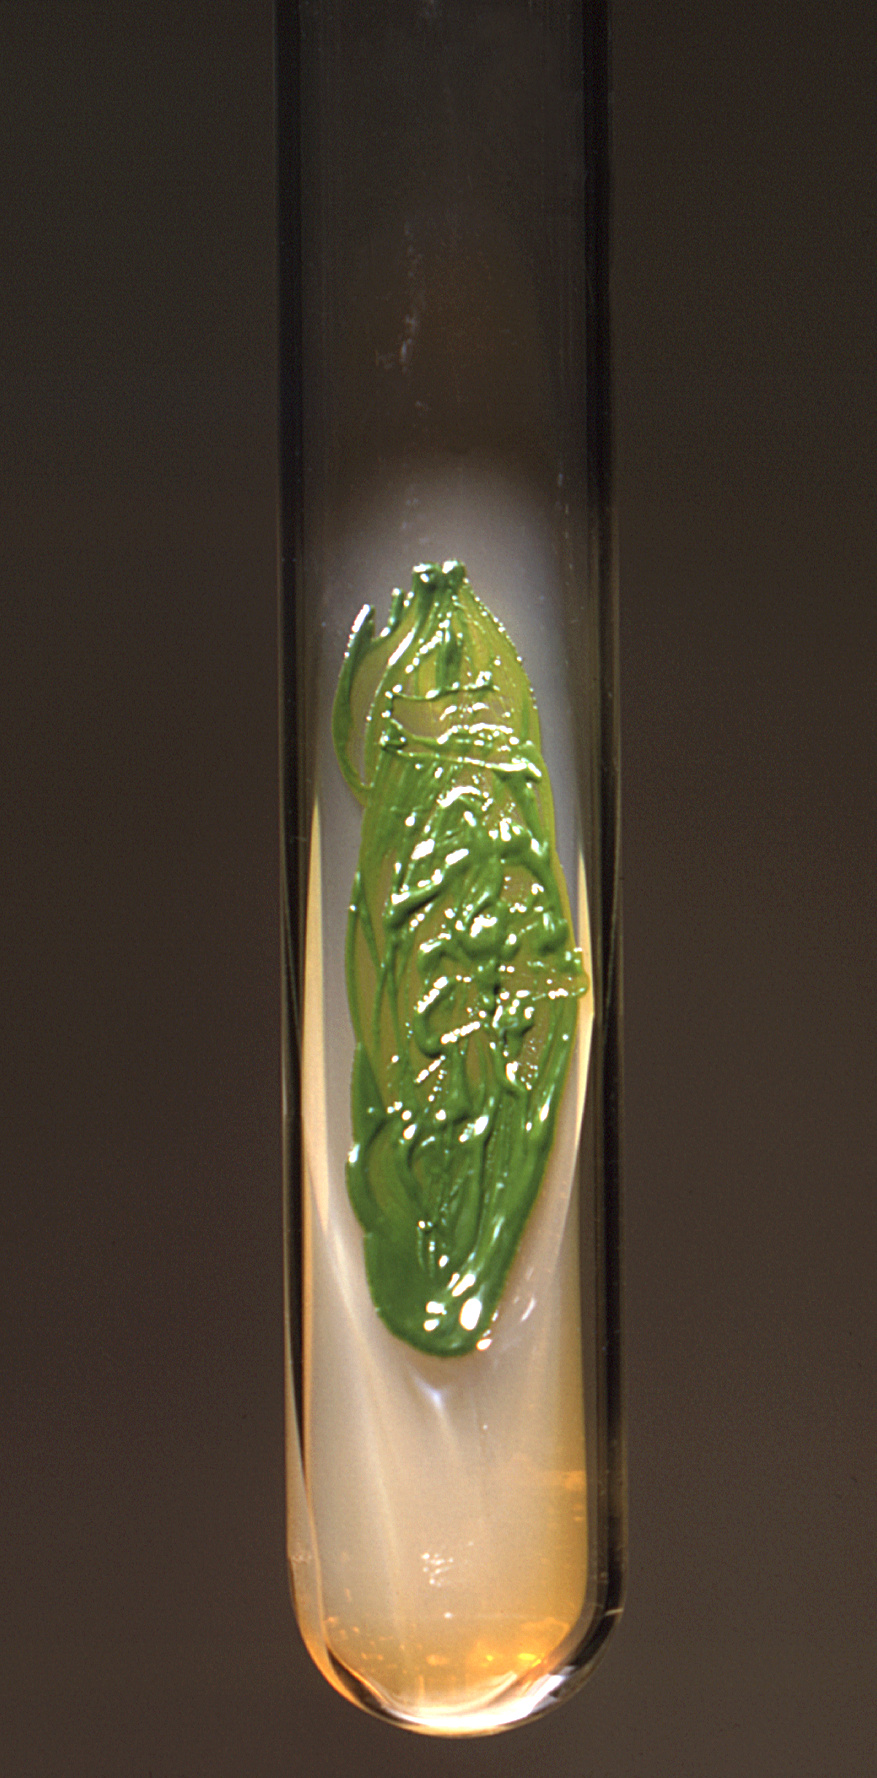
This 1971 image depicted a Sabourauds dextrose agar slant culture, which had cultivated a colony of Chlorella sp. algal organisms.